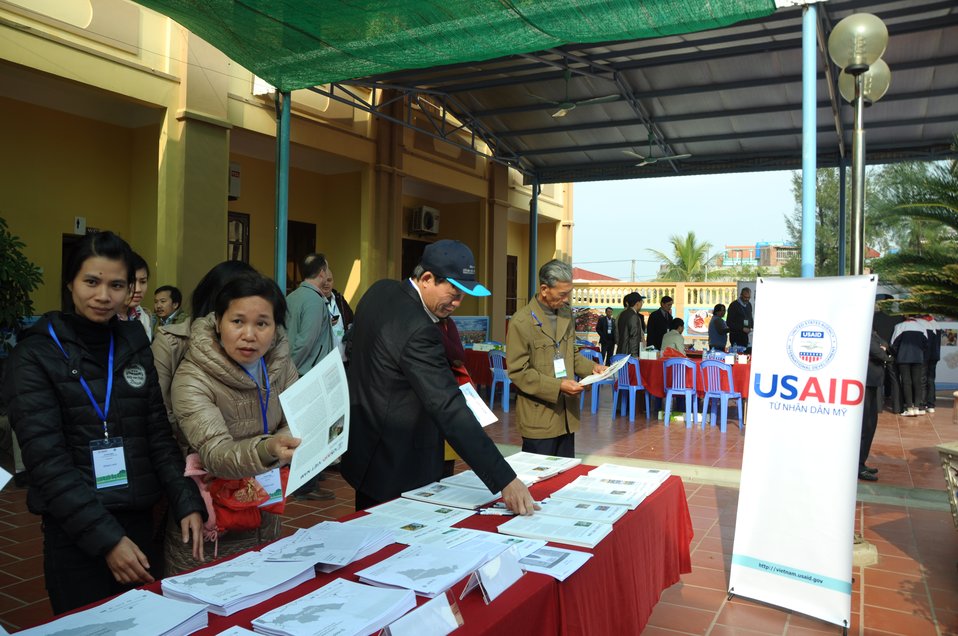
USAID launches the Vietnam Forests and Deltas project in Nam Dinh province.

Quat Lam, Nam Dinh. January 16, 2014.